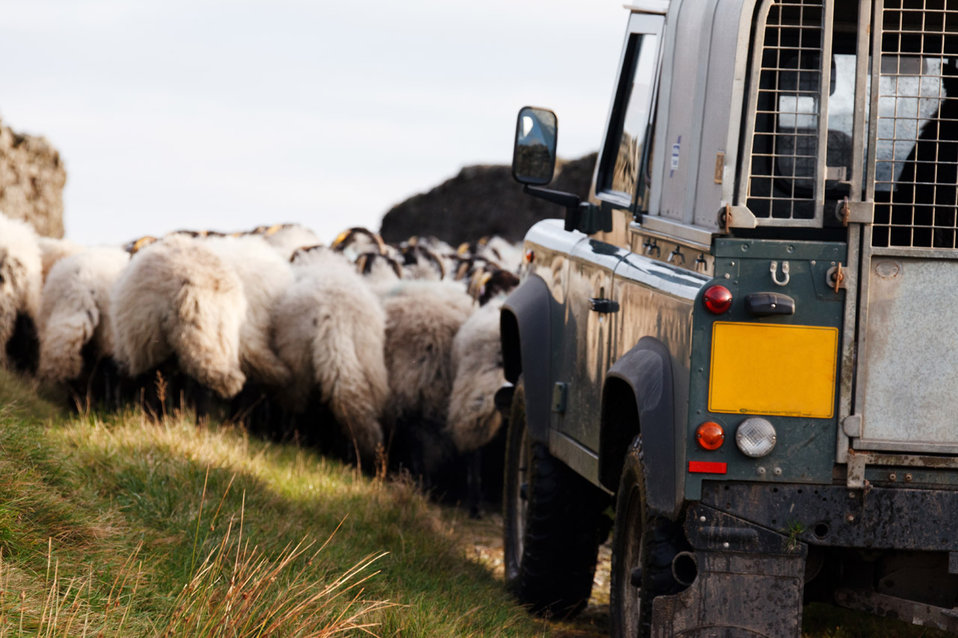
Shepherd and sheep

Shepherd taking sheep to pasture.